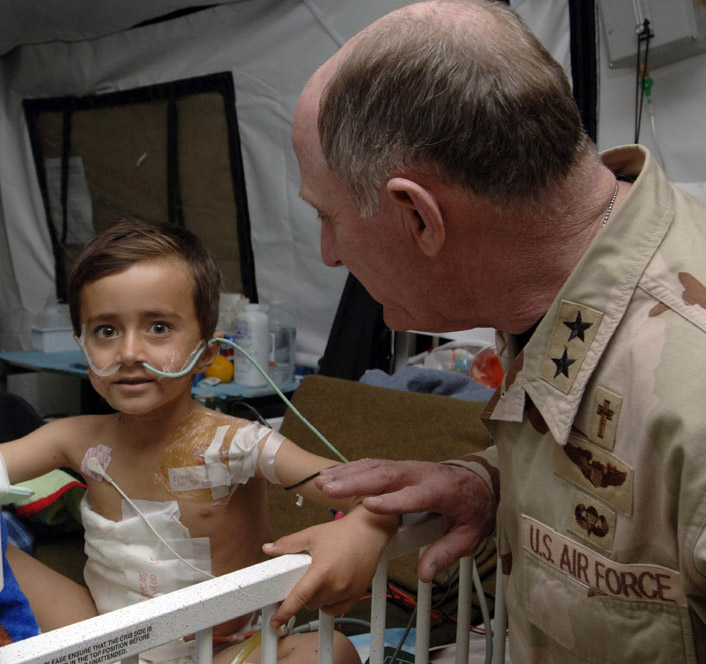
Chaplain and child

BALAD AIR BASE, Iraq (AFPN) -- Chaplain (Maj. Gen.) Charles Baldwin, Air Force Chaplain Service chief, visits an Iraqi child being treated at the Air Force theater hospital for injures from an insurgent mortar attack.